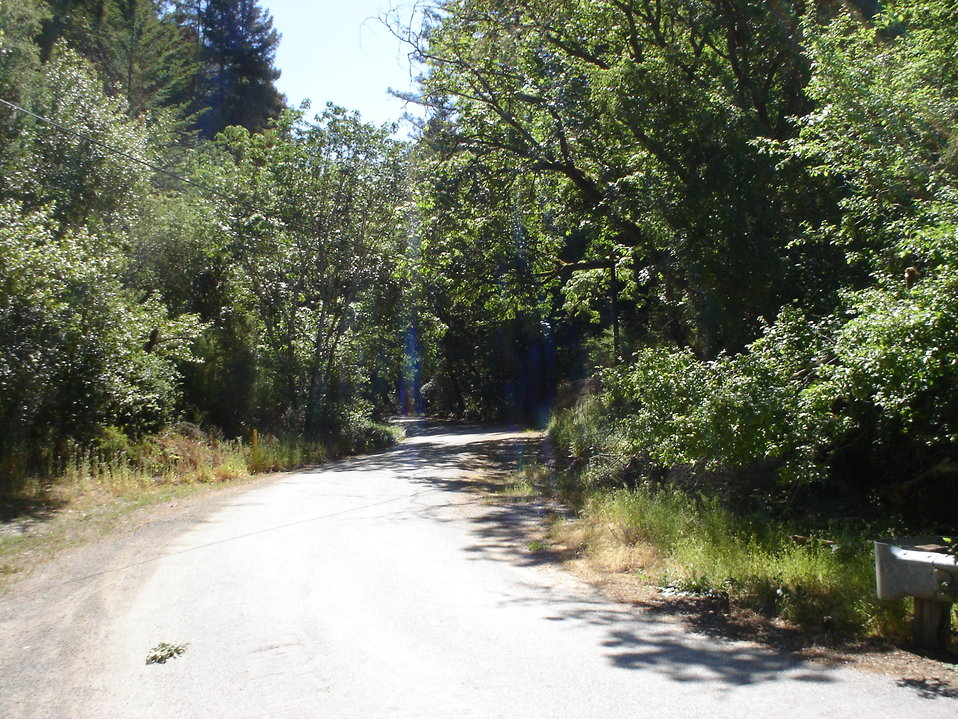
Author:Robert E. Nylund Source:Personal Photos